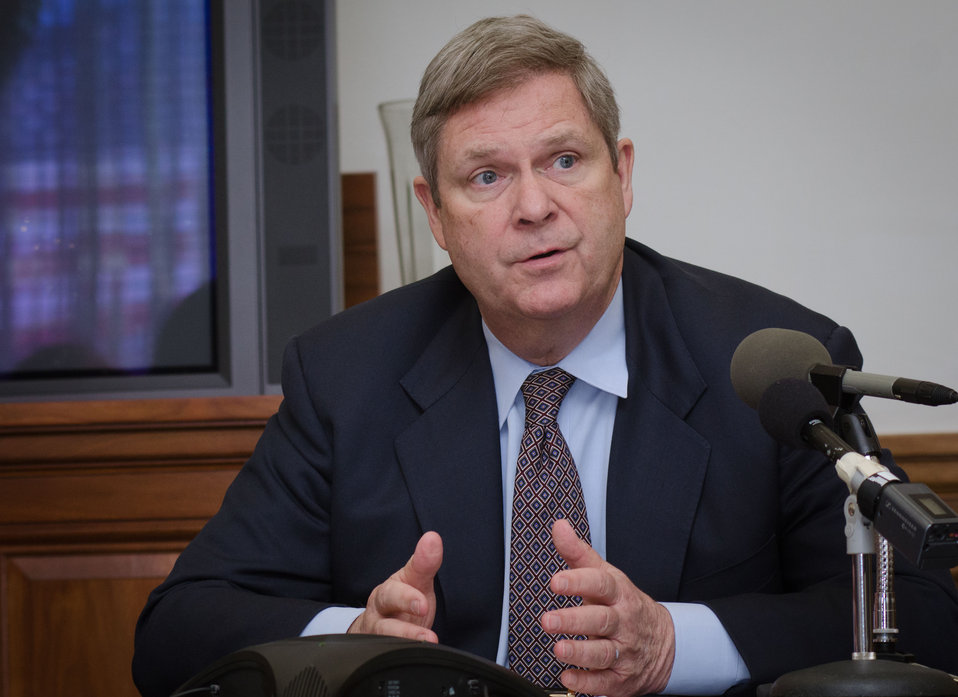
Agriculture Secretary Tom Vilsack briefed in-house reporters and held a media conference call to review the Agriculture FY2013 budget in Washington, D.C. on Monday, February 13, 2012.